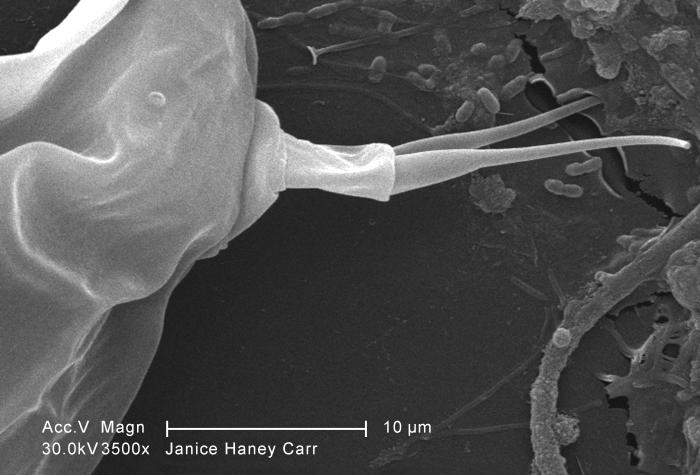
Under a moderate magnification of 3500X, this scanning electron micrograph (SEM) of an untreated water specimen extracted from a wild stream mainly used to control flooding during inclement weather, revealed the presence of unidentified organisms, which included bacteria, protozoa, and algae. In this particular view, the caudal end of a single copepod-like microorganism was seen occupying the field of view. Also, if you look closely towards the upper right corner, you'll also notice the small grouping of bacteria, which had become enmeshed in a patch of biofilm.